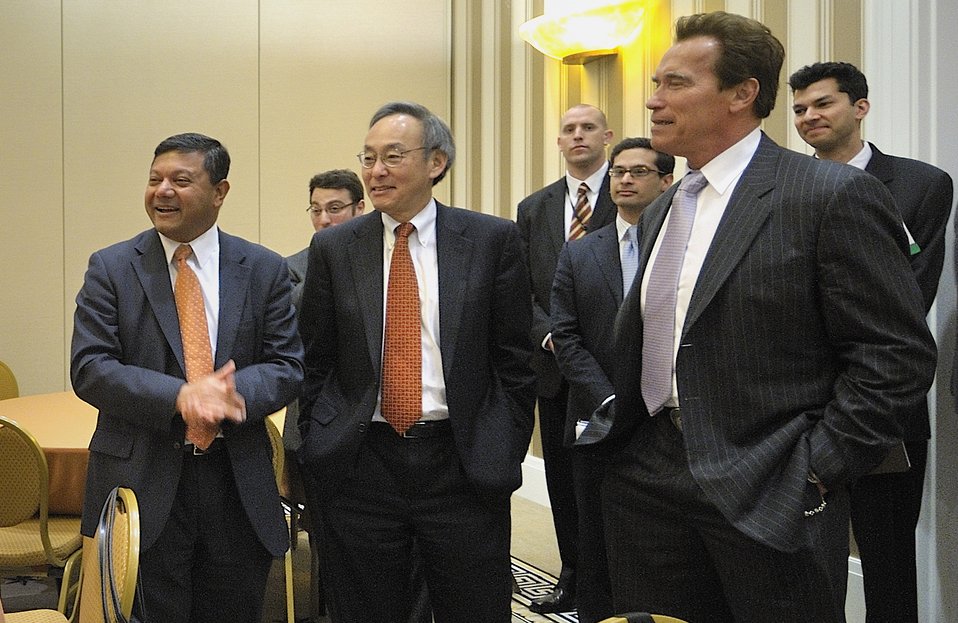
ARPA-E Energy Innovation Summit 2011, 3 of 83

Steven Chu, Secretary, United States Department of Energy along with Dr. Arun Majumdar, Director of ARPA-E, and Arnold Schwarzenegger, Former Governor of California surprise graduate students who traveled to the summit.